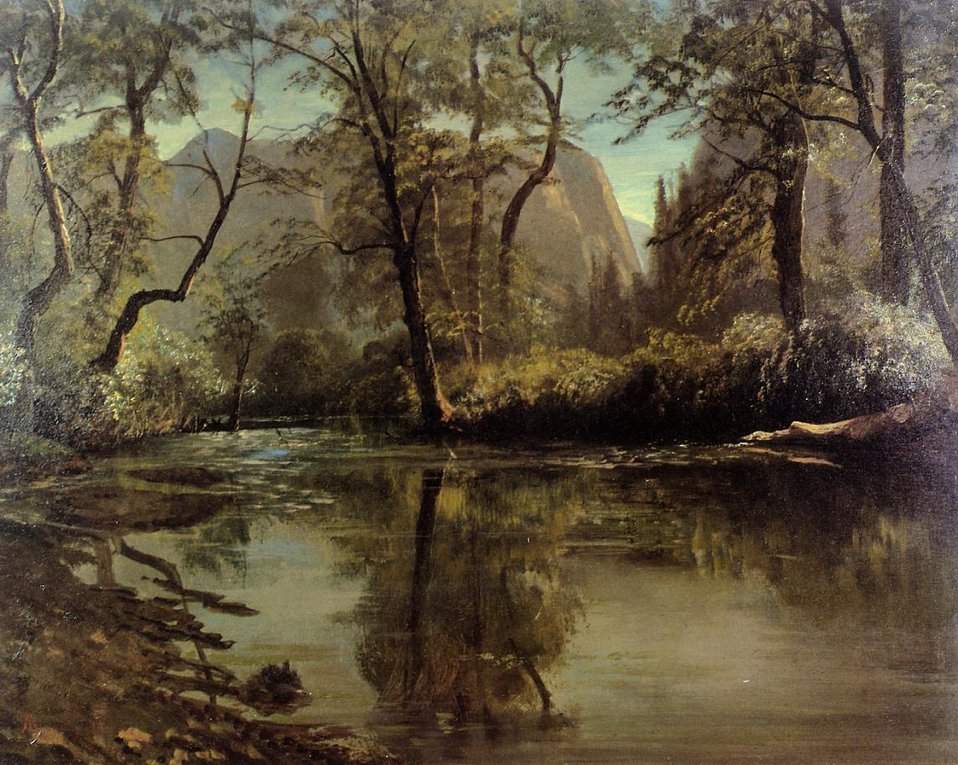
Bierstadt Albert Yosemite Valley California